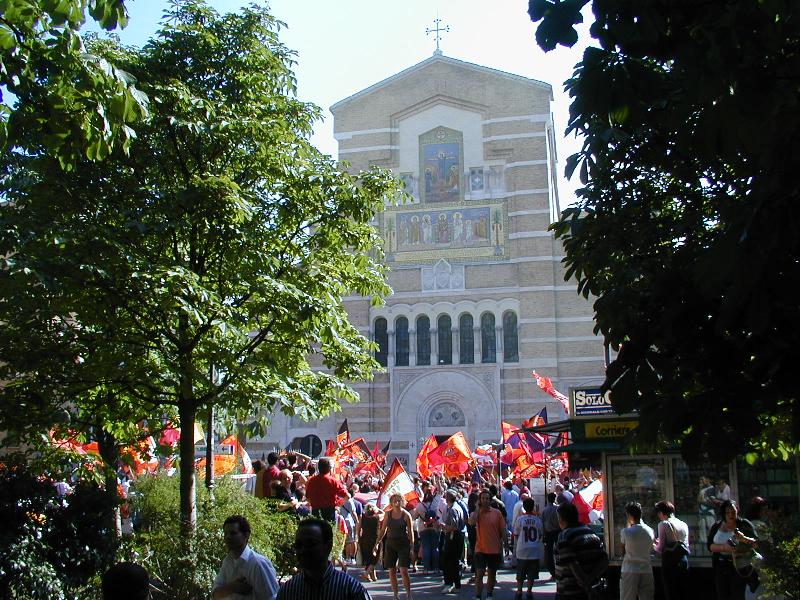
010617 46 testaccio